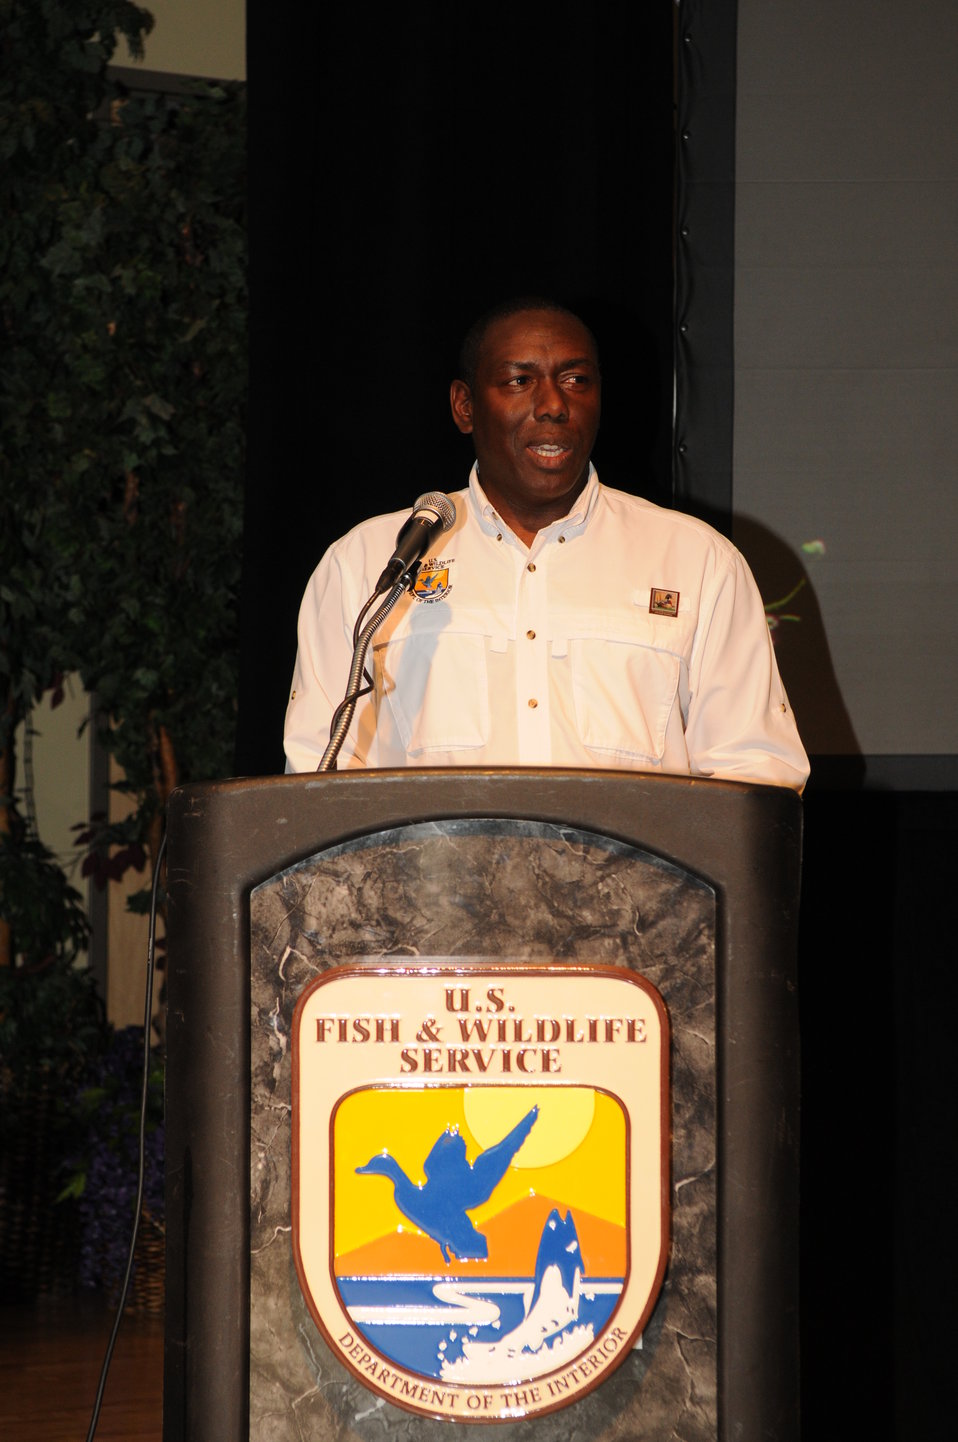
Day 2 Opening Remarks

The U.S. Fish & Wildlife Service sponsored the 2012 Federal Duck Stamp Art Contest September 28 and 29 in Ogden, Utah, at Weber State University. A panel of five judges was responsible for choosing the art work used to design the 2013-2014 Migratory Bird Hunting and Conservation Stamp.